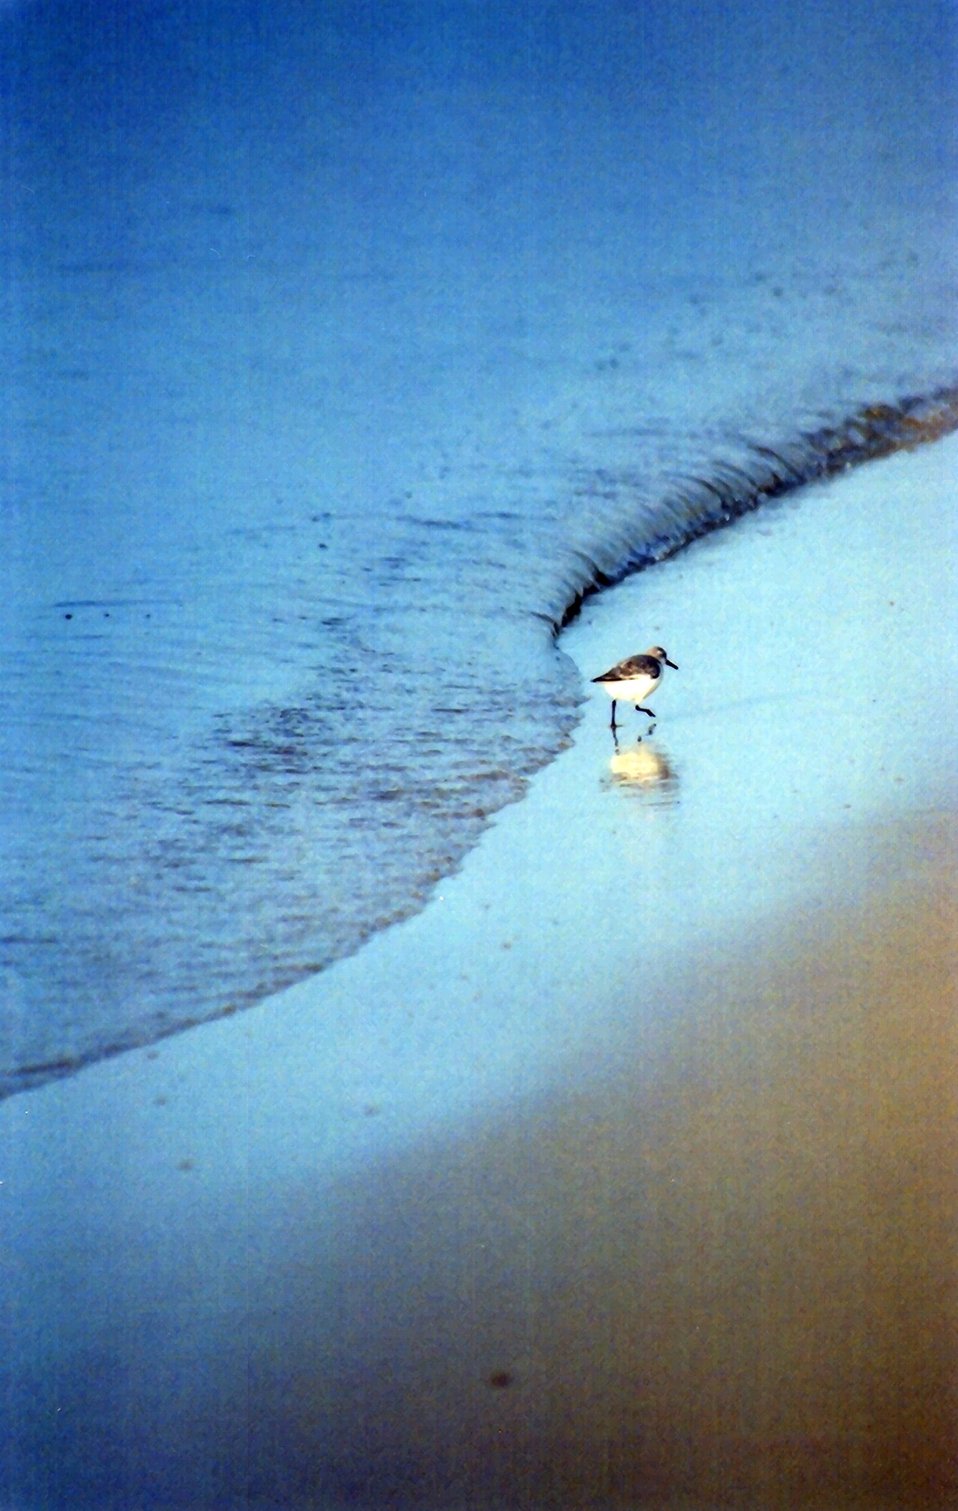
A lone sandpiper patrolling the edge of the surf line in search of dinner.